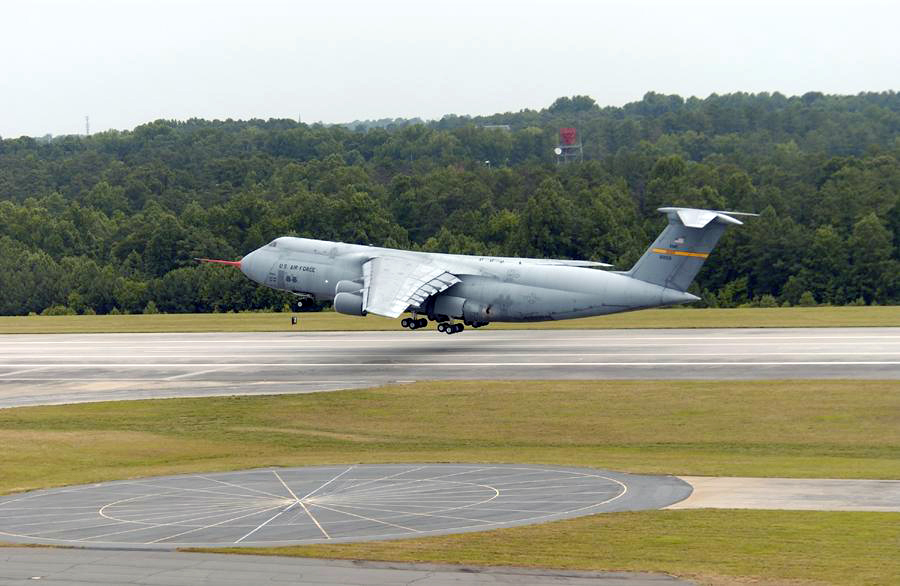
C-5 still going strong after 38 years

A modernized version of the C-5 Galaxy, known as the C-5M, made its maiden flight at Dobbins Air Reserve Base, Ga., on Monday, June 19. Upgrades to the venerable airlifter include new, more powerful engines; a modern cockpit with a digital, all weather flight control system, a new communications suite and enhanced navigation and safety equipment.